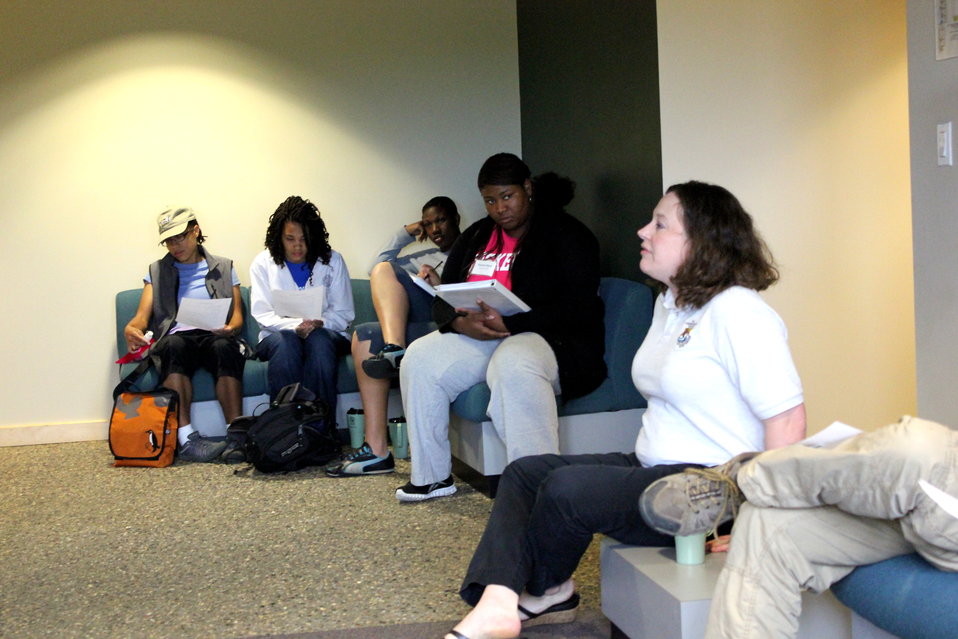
CDIP 2012 Fergus Falls

Ann Marie, giving instruction